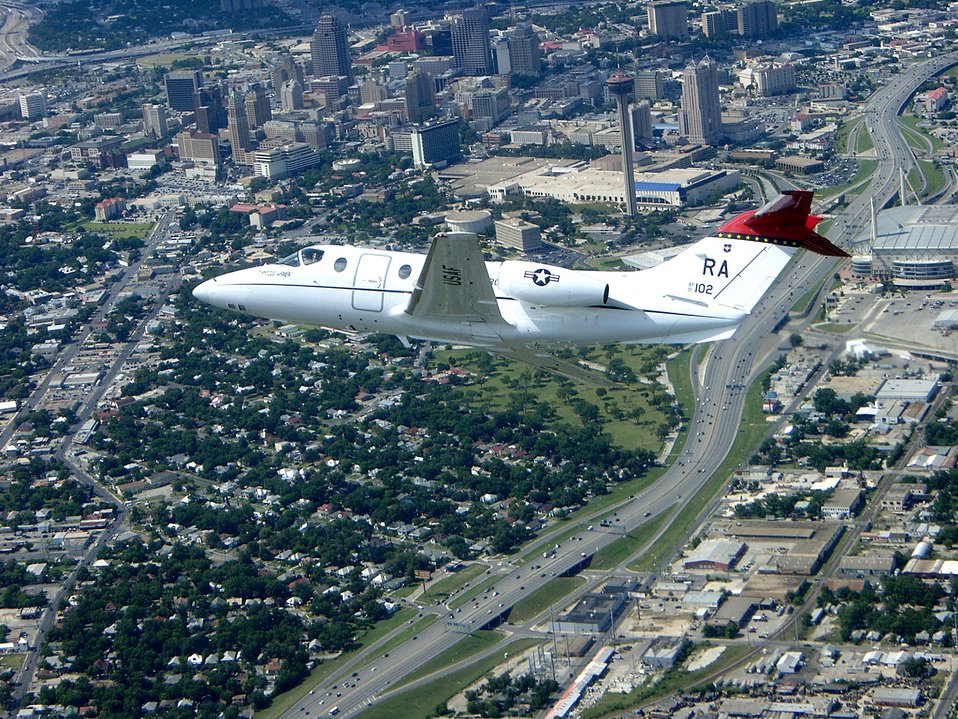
T-1 over San Antonio

A T-1A Jayhawk flies over downtown San Antonio. The aircraft is assigned to the 99th Flying Training Squadron at Randolph Air Force Base, Texas.